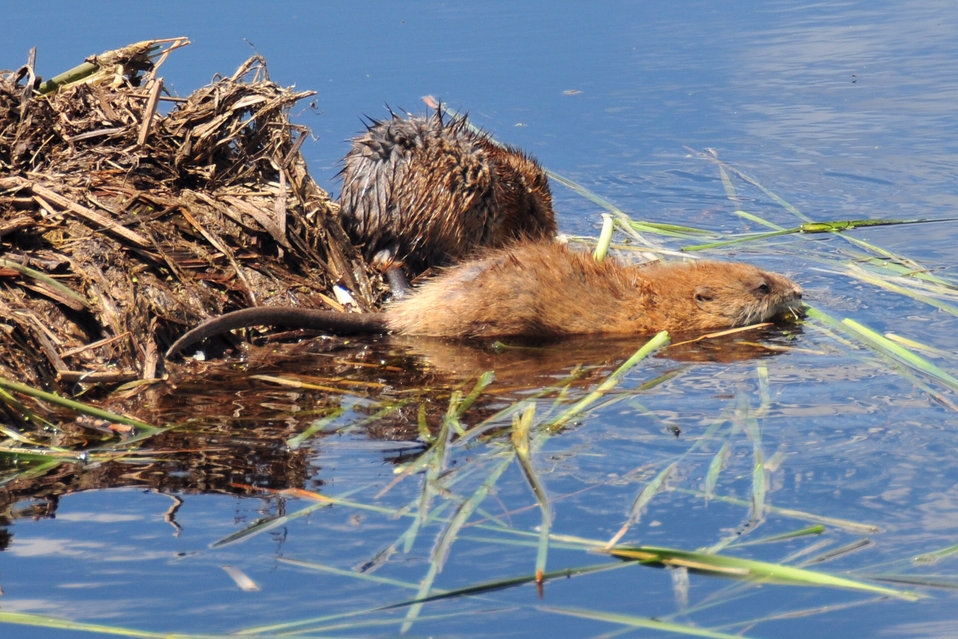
Muskrats pair feeding Lacreek NWR 02

A pair of muskrats feeding on cattail stems on Lacreek NWR Photo: Tom Koerner/USFWS